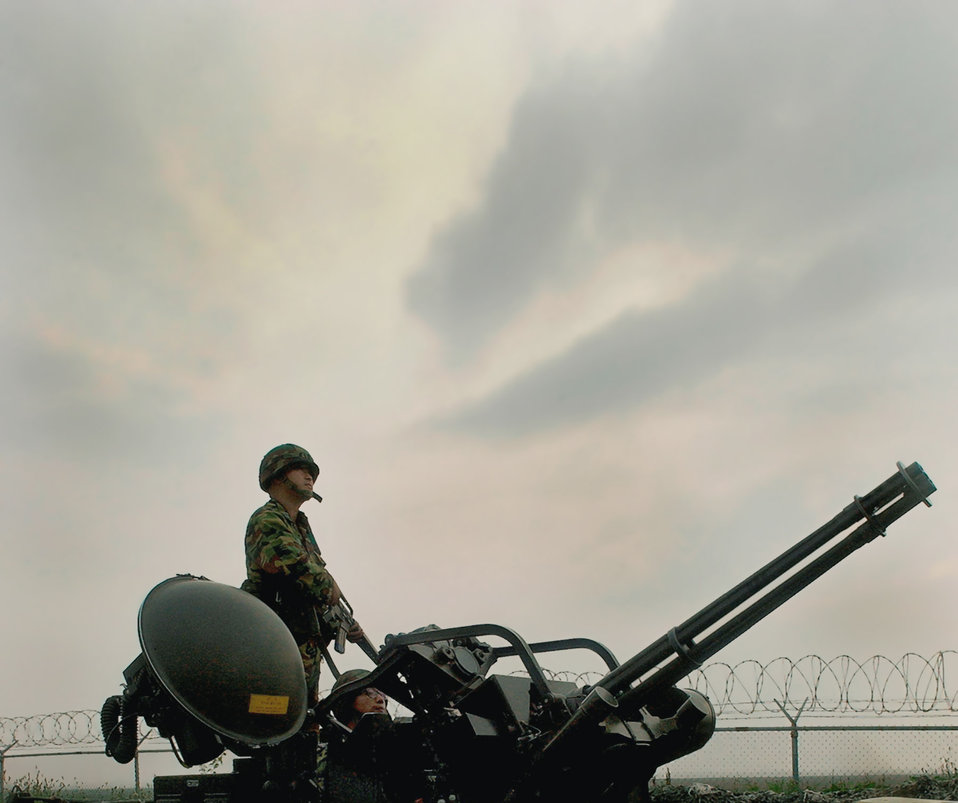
U.S., South Korean Airmen train on base defense plan

Korean Air Force Staff Sgt. Donghoon Lee directs a fellow Republic of Korea Airman during operation of the M-61 20 mm Vulcan cannon July 24 at Kunsan Air Base, Republic of Korea. Airmen from the 38th Fighter Group and 8th Security Forces Squadron work and train together to better enhance the base's defense plan in the event of hostilities on the peninsula. The Korean Airmen are assigned to the 38th FG anti-aircraft battery.